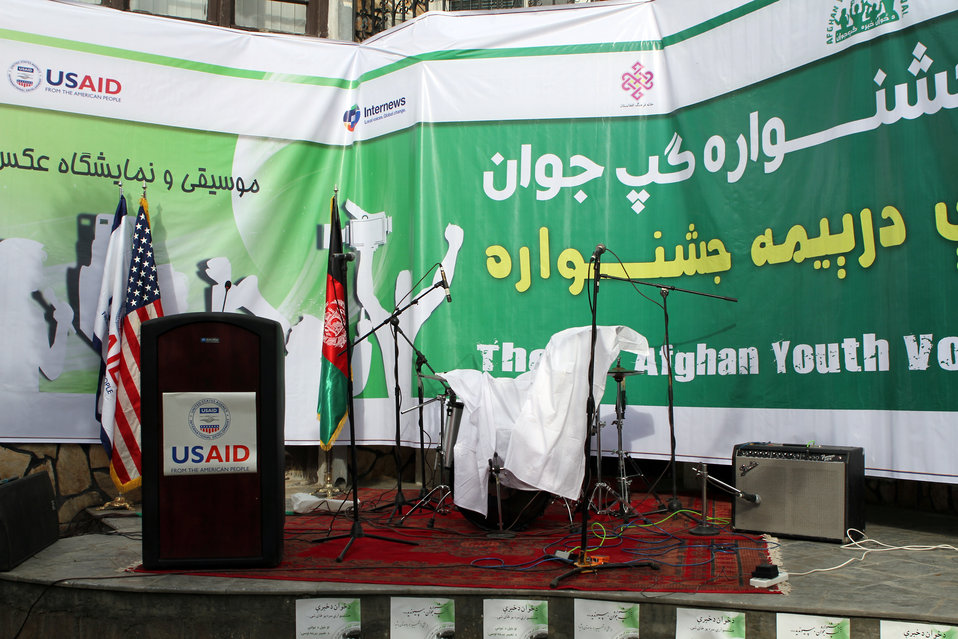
Afghan Youth Festival

Internews - USAID